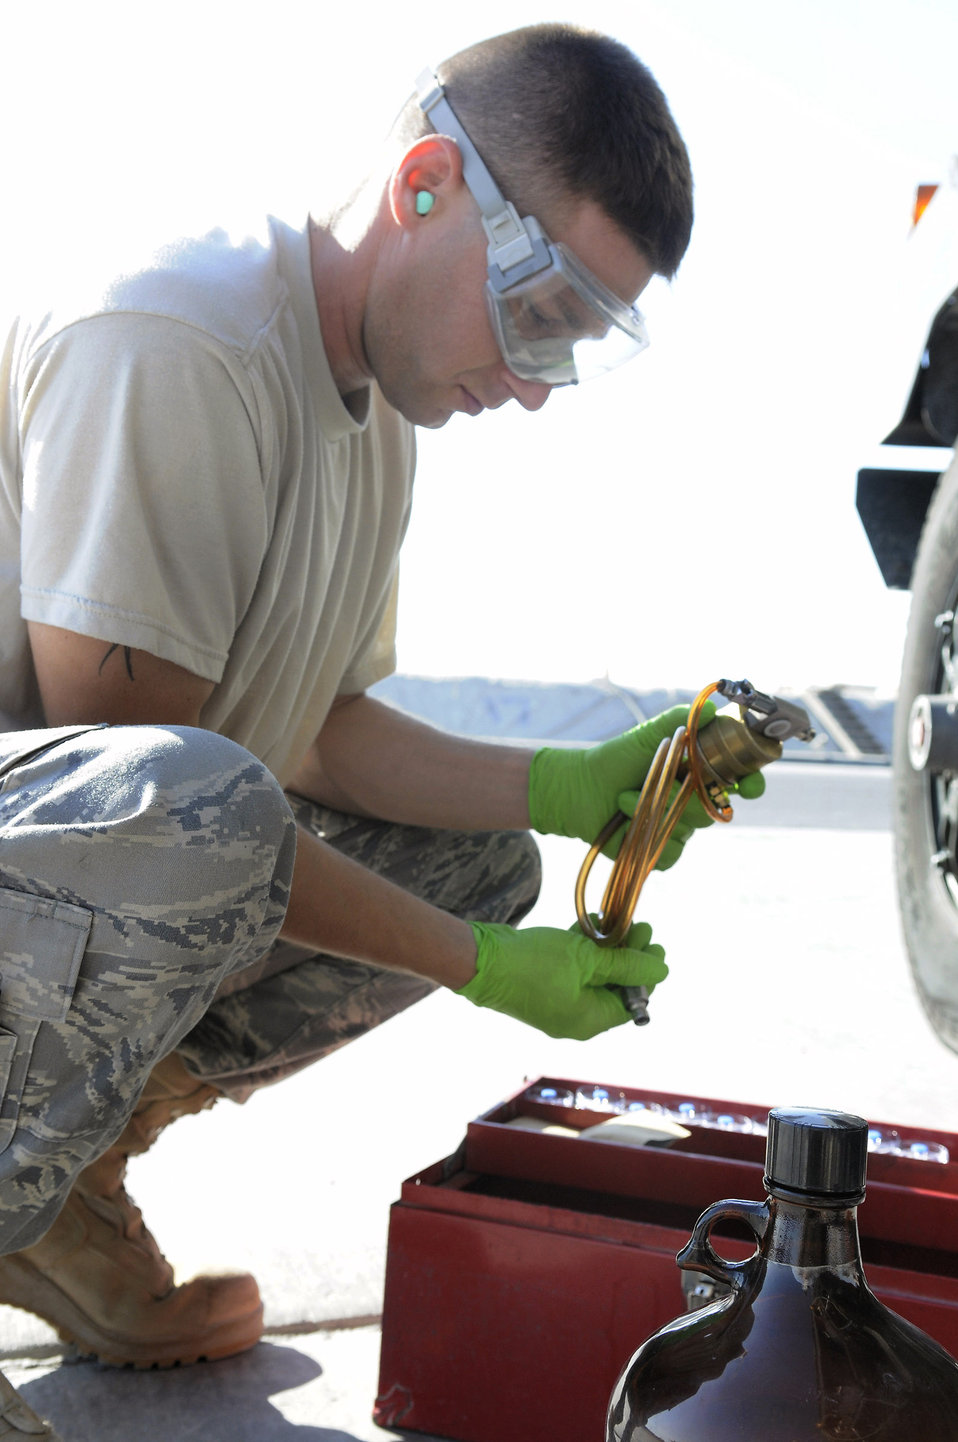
Fuel quality

Staff Sgt. Ronald Gasper examines a hose and stopper used for filling a bottle with JP-8 fuel so he can perform a bottle method test of the fuel Dec. 8 at an air base in Southwest Asia. The bottle method test is used to test a fuel truck's filter separator and measures the amount of impurities in the fuel. Sergeant Gasper is a fuels lab technician assigned to the 379th Expeditionary Logistics Readiness Squadron and deployed from Scott Air Force Base, Ill. He is a native of Omaha, Neb.